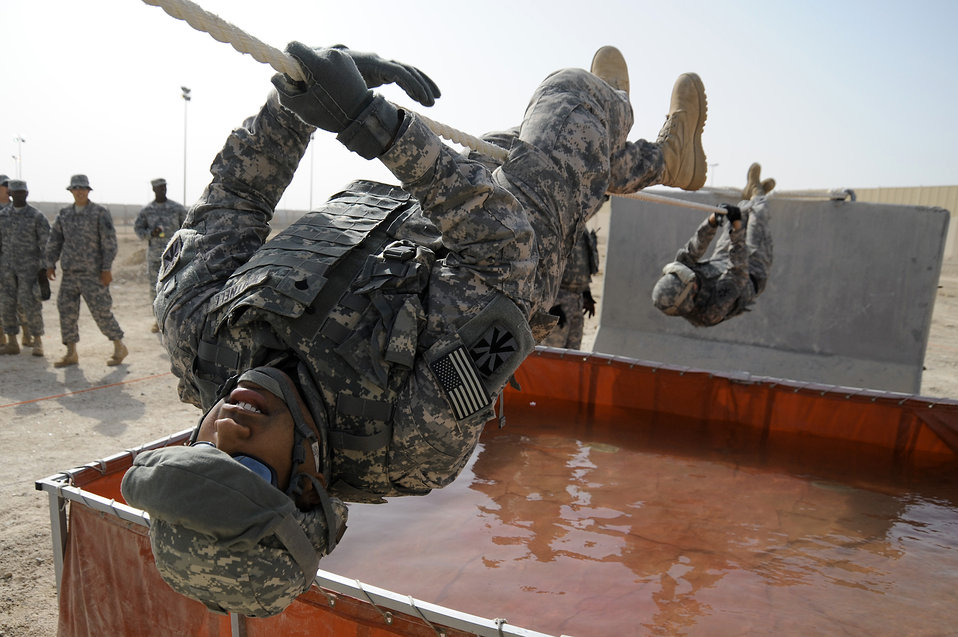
Challenge pushes Airmen, Soldiers

Army Spc. Alexandre Whitnell uses a 15 foot rope to cross a water obstacle with his teammates following behind during a Defender Challenge course April 25 at an air base in Southwest Asia. Specialist Whitnell is with the 5-52 Air Defense Artillery Battalion out of Fort Bliss, Texas. The competition was close with his team finishing second place, just one second behind the winning team.